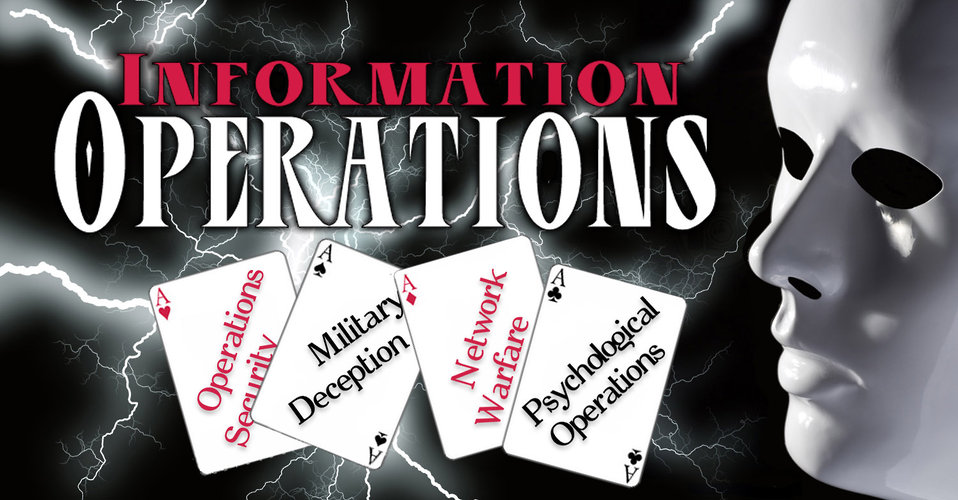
Air University course teaches principles of information operations

Air University offers a one-week Information Operations Fundamentals Applications Course for rated officers and Airmen in public affairs and communications career fields with the ranks E-3 through 0-5. All other Airmen are eligible to attend on a space available basis. For fiscal 2009 the schedule is as follows: Oct. 6-10, Nov. 17-21, Jan. 12-16, Feb. 9-13, April 6-10, July 13-17, Aug. 10-14 and Aug. 31-Sept. 4, 2010.